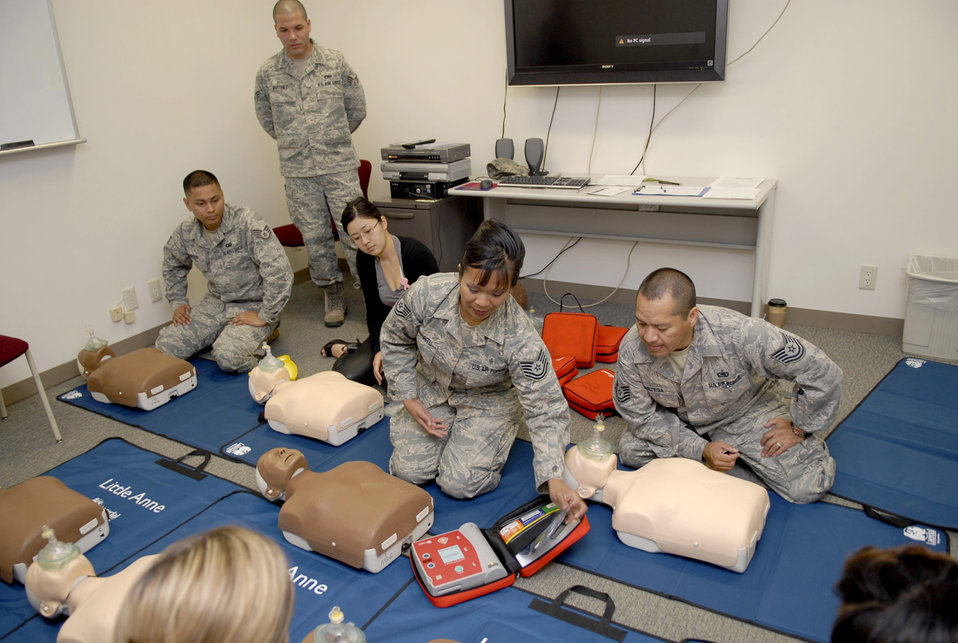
New CPR training wants you to switch your ABCs

Tech. Sgt. Jeanette Espiritu demonstrates how to apply automated external defibrillator pads April 15, 2011, during a Heartsaver class at Kadena Air Base, Japan. Sergeant Espiritu is a basic life-support administrator who taught the use of AEDs during the class where students learned the new American Heart Association CPR method of administering immediate chest compressions.